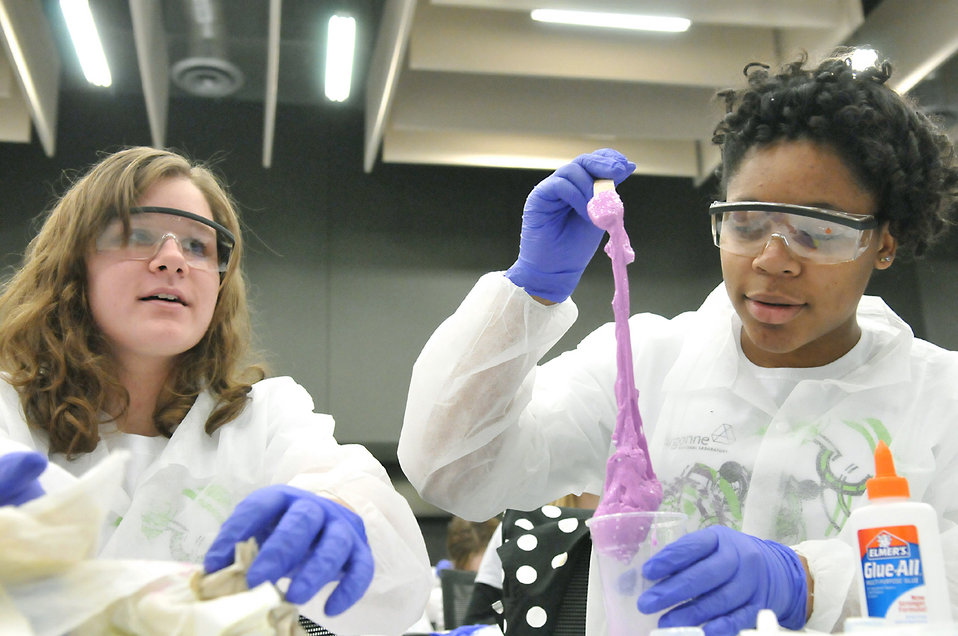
Participants in the Argonne National Laboratory's Introduce a Girl to Engineering Day 2012.